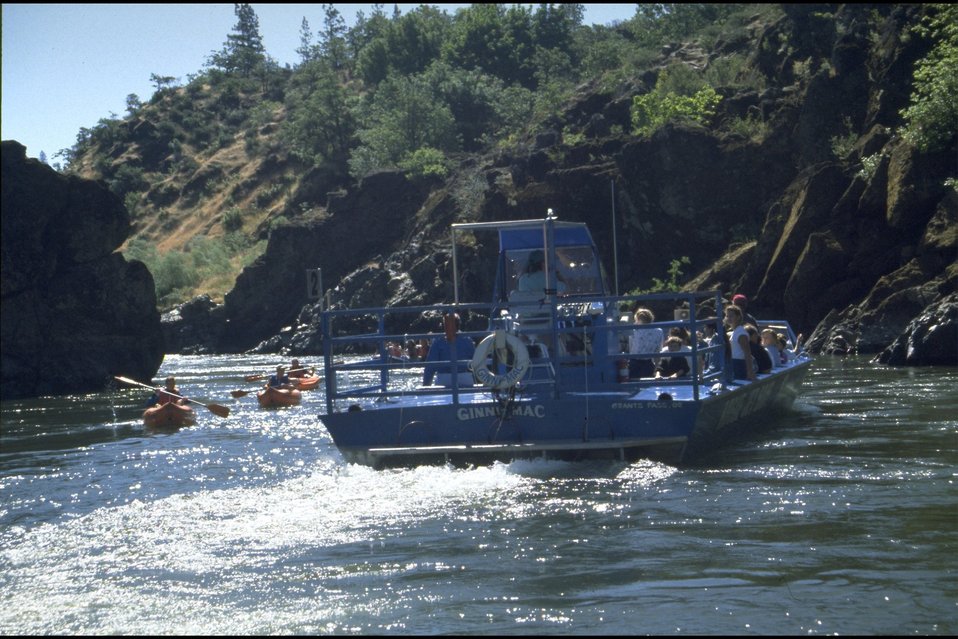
Rogue River - Hellgate Canyon. commercial Jet boat from Grants Pass and a few inflatable kayaks.